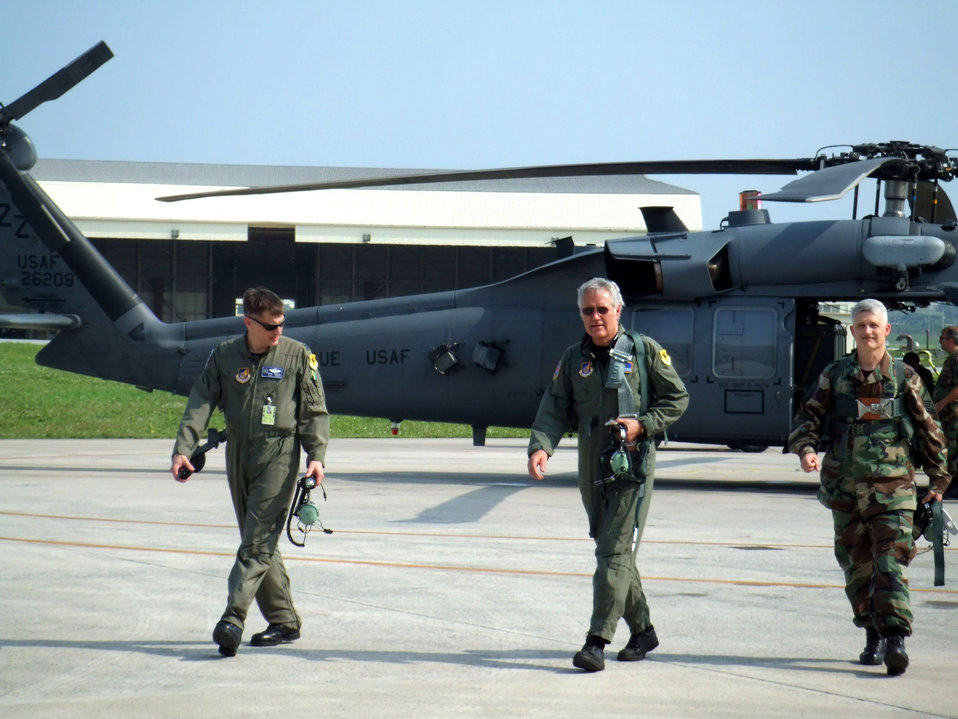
'Jeopardy!' celebrates Air Force's 60th anniversary

Alex Trebek (center), host of the TV game show